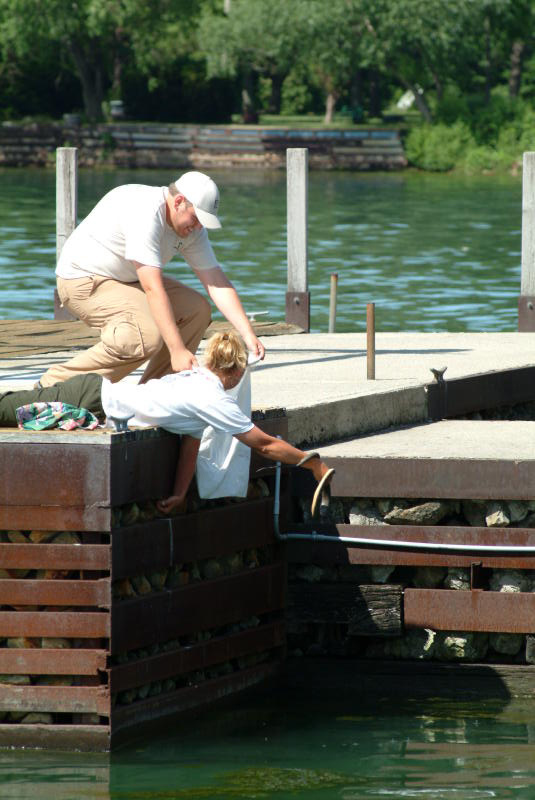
Recovered Lake Erie watersnake (Nerodia sipedon insularum)